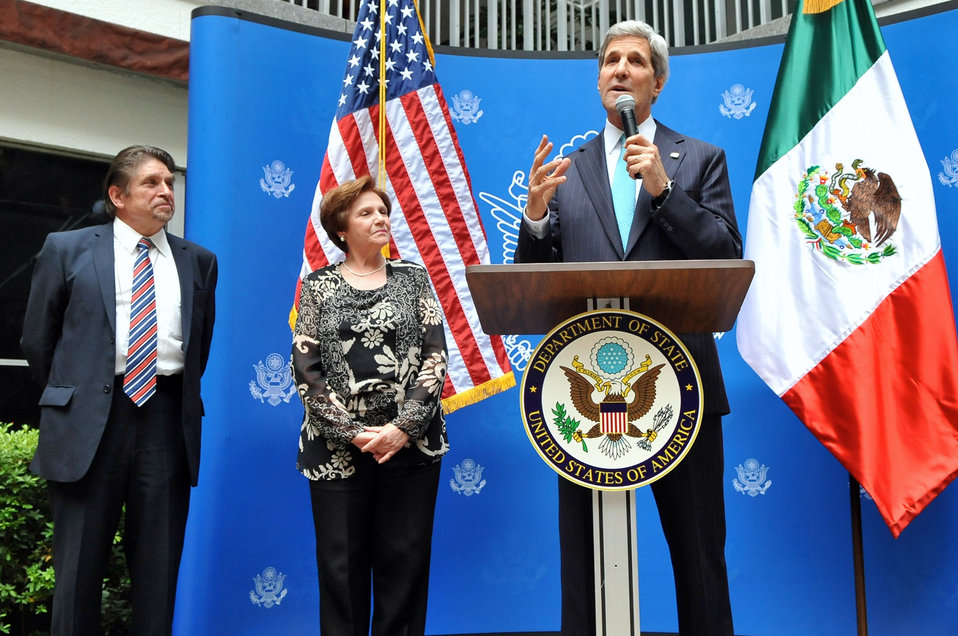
Secretary Kerry Salutes Two 42-Year Embassy Mexico City Employees

U.S. Secretary of State John Kerry salutes Ana Elena Tappan Alvarado and Arturo Montano Robles during a visit to U.S. Embassy Mexico City on May 21, 2014, in recognition of the 42 years they each have spent working at the mission.